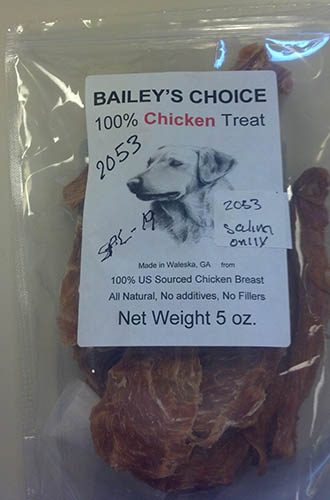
RECALLED – Pet Treats

November 6, 2013 – Product Recall – Bailey’s Choice Expands Product Recall of Dog Treats in Georgia.